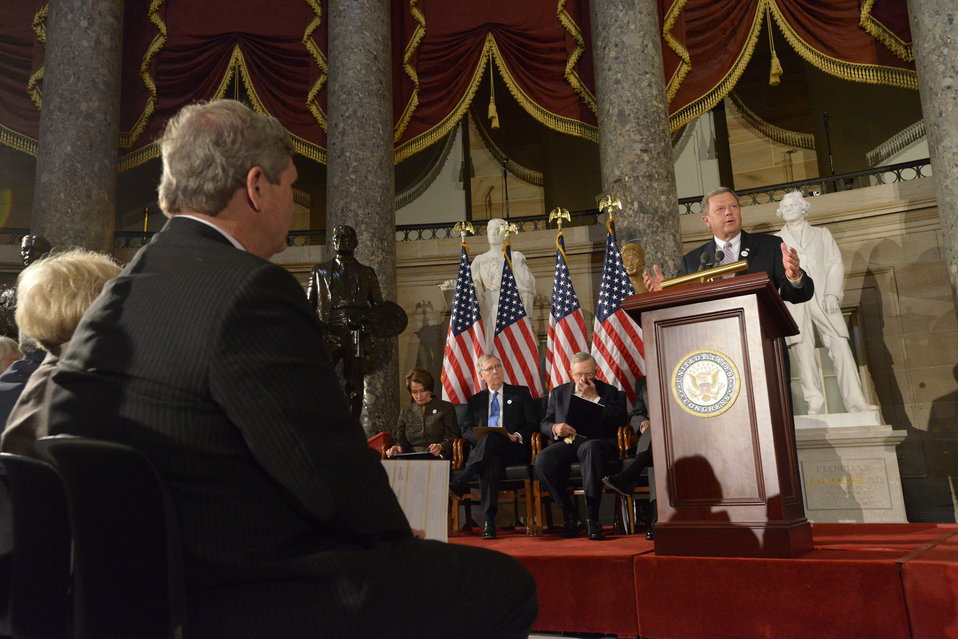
Agriculture Secretary Tom Vilsack listens to Congressman Tom Latham at the unveiling ceremony of the Dr. Norman Borlaug statue in National Statuary Hall at the U.S. Capitol in Washington, D.C. on Tuesday, Mar. 25, 2014.